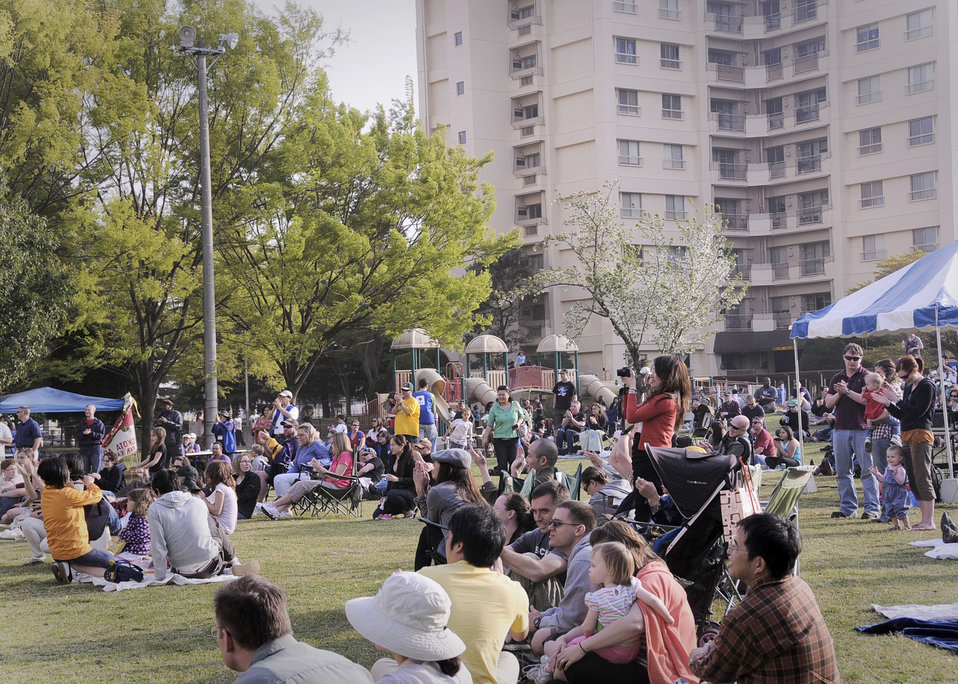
Yokota community raises $24K for relief efforts

YOKOTA AIR BASE, Japan -- Yokota members watch as the rock band Days Gone By performs during Tomodachistock 2011 on April 16, 2011, at Yokota Air Base, Japan. More than 700 people gathered to enjoy music, friendship and food while helping the American Red Cross raise money to support the earthquake and tsunami relief efforts.